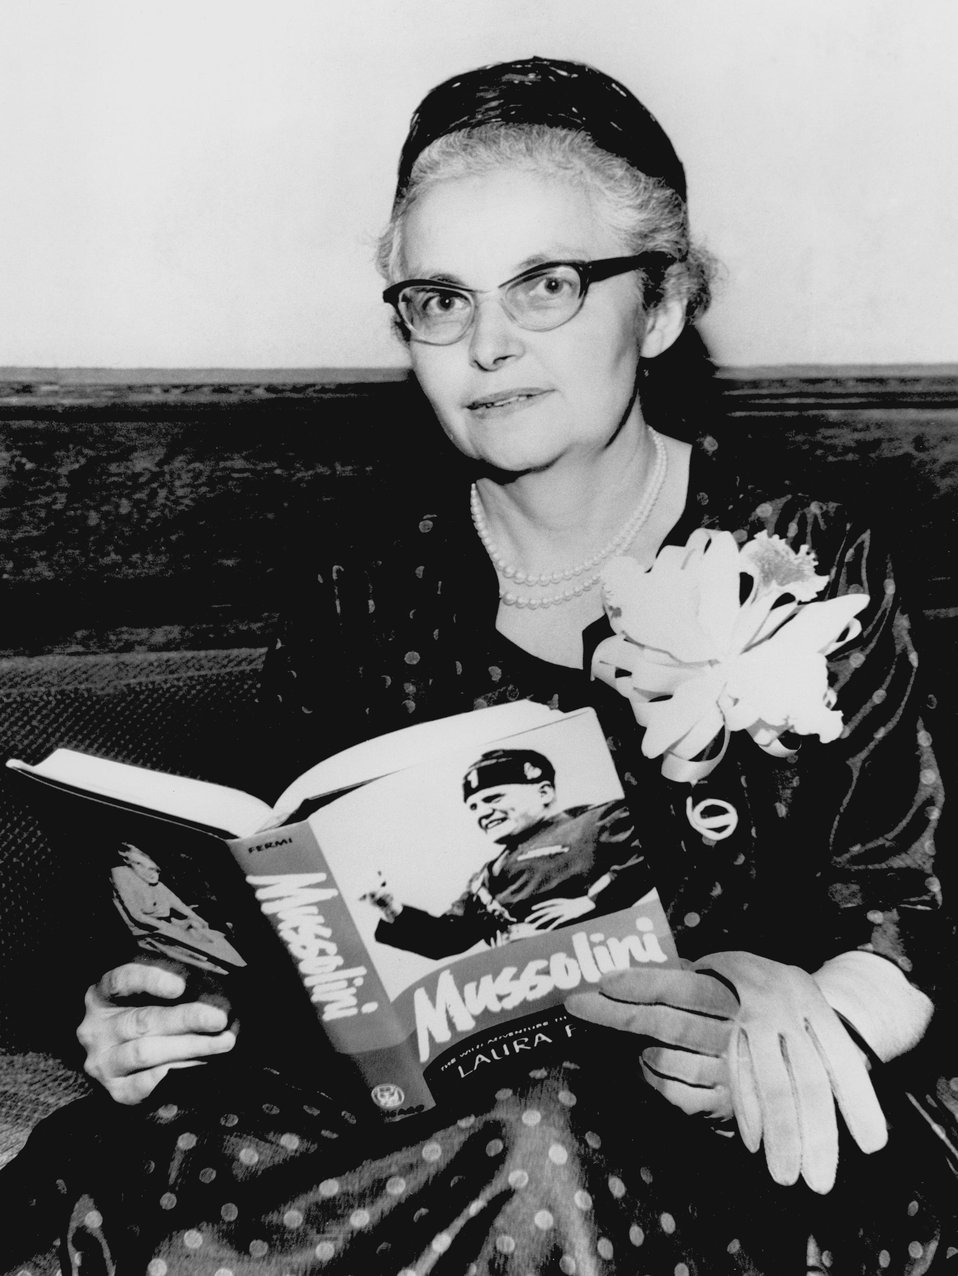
Mrs. Laura Fermi.